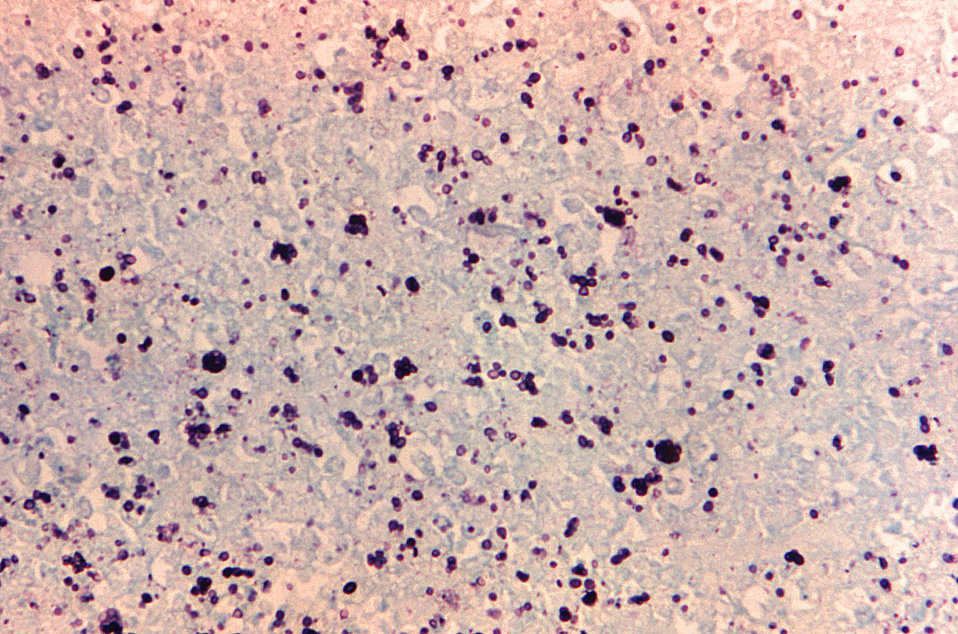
Magnified 300X, this photomicrograph revealed the presence of Histoplasma capsulatum var. duboisii fungal organisms in an unidentified tissue sample.What is histoplasmosis?